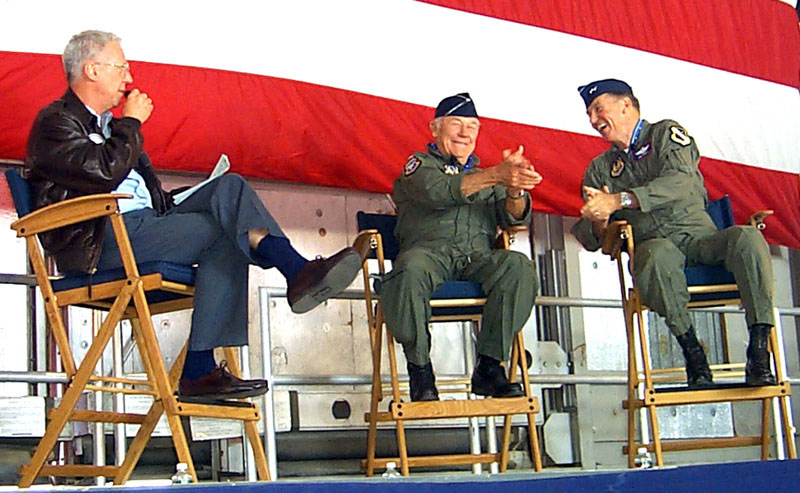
History

EDWARDS AIR FORCE BASE, Calif. -- Former